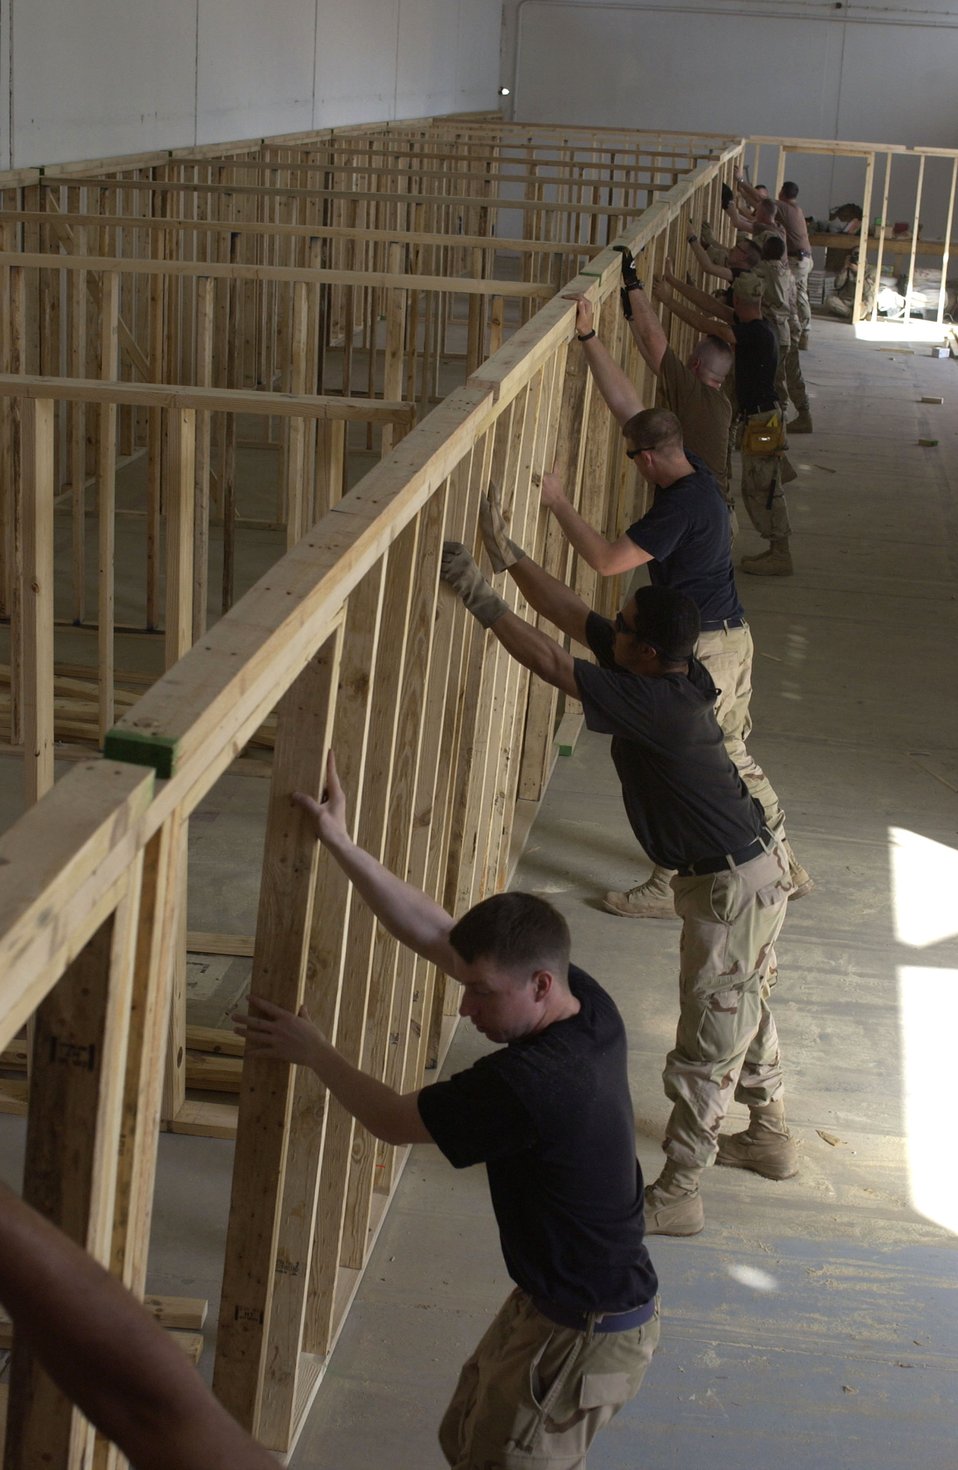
Office renovation

Airmen from the 557th Expeditionary Red Horse Squadron position a wall during renovation of an office building at Balad Air Base, Iraq, on Thursday, April 20, 2006.